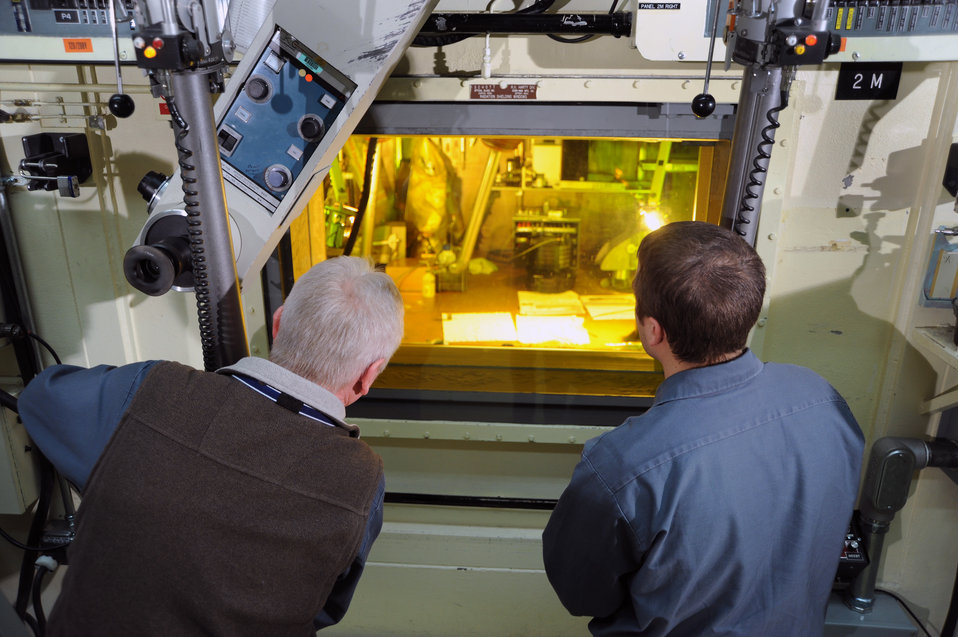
INL has developed a new way to analyze irradiated nuclear fuel, which can help engineers better understanding how new fuel types stand up to prolonged irradiated so they can be safely used in commercial power reactors.